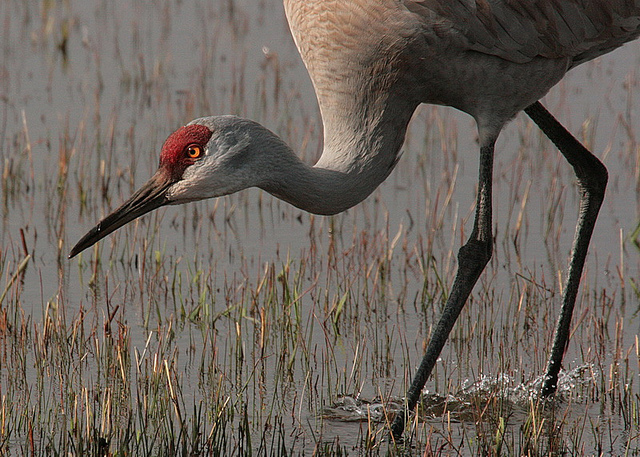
greater sandhill crane

Malheur National Wildlife Refuge, OR